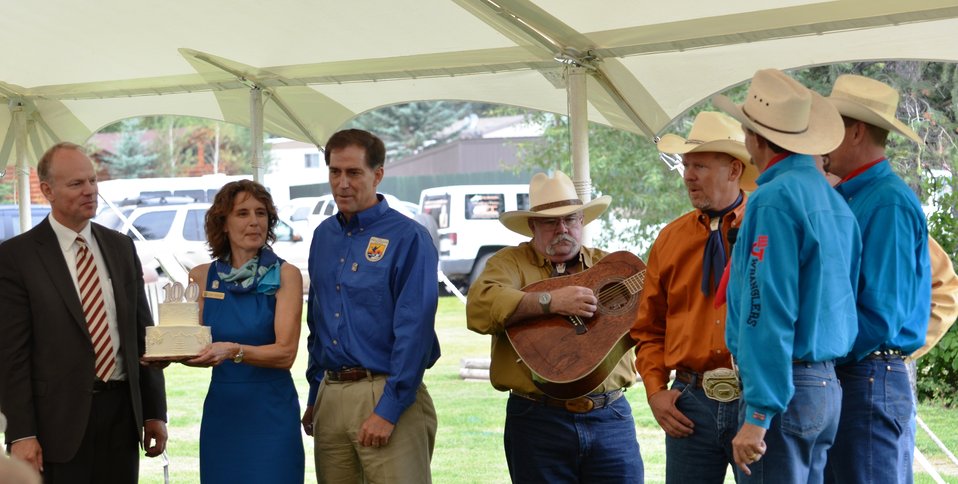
The Bar J Wranglers Lead the Song

The musical group, the Bar J Wranglers, sang the National Anthem at the beginning of the National Elk Refuge's centennial ceremony. Later, they led the audience in the Happy Birthday Song as a cake was carried in. Wyoming Governor Matt Mead and USFWS Director Dan Ashe stood by to blow out the candles at the end of the song.

Credit: USFWS / Bobby Harkey, National Elk Refuge volunteer